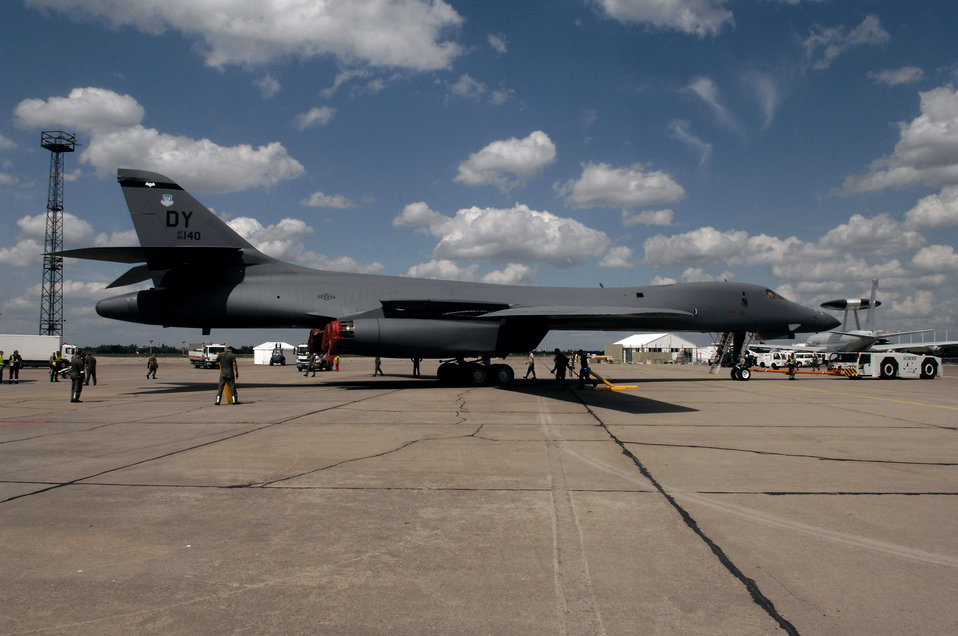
Airmen prepare for 2008 Berlin Air Show

Schoenefeld Airport contractors tow a B-1B Lancer bomber aircraft into place in preparation of the 2008 Berlin Airshow here May 24. The B-1B, its aircrew and maintenence personnel are based with the 7th Bomb Wing at Dyess Air Force Base, Texas.